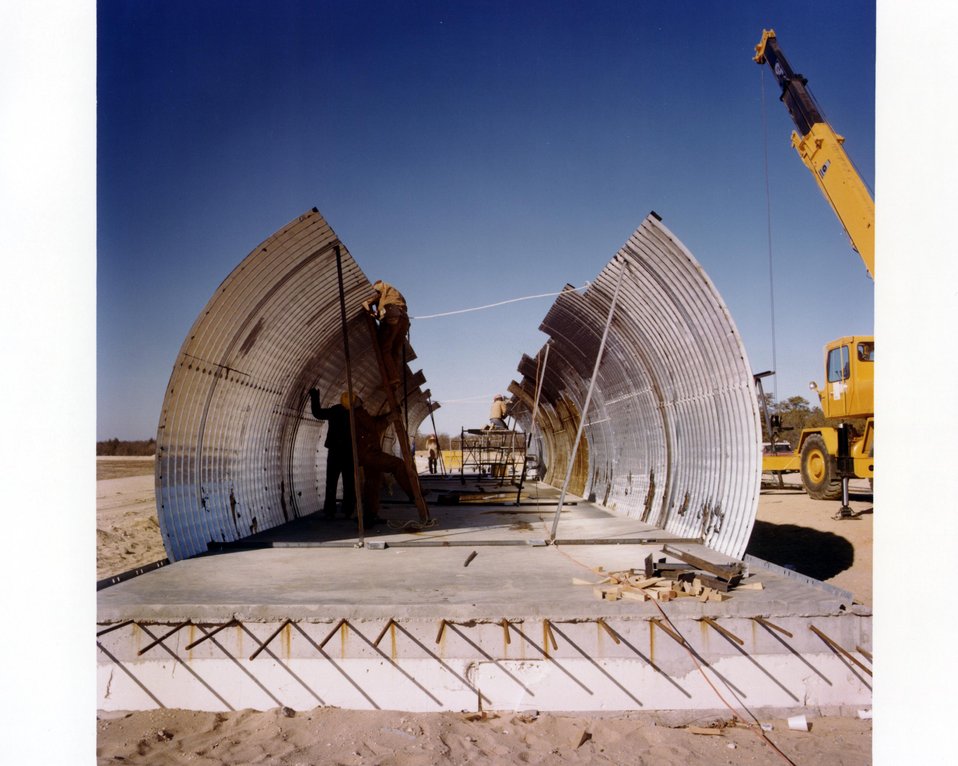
CBA, A PROTON-PROTON COLLIDING BEAM ACCELERATOR TO STUDY THE BASIC STRUCTURE OF ENERGY AND MATTER, IS BEING BUILT ON THE NORTHWEST QUADRANT OF THE 5,250 ACRE BROOKHAVEN SITE. THE FACILITY ITSELF IS AN UNDERGROUND CIRCULAR TUNNEL, WHICH IS 3.8 KILOMETERS IN CIRCUMFERENCE. TWO RINGS OF SUPERCONDUCTING MAGNETS WILL BE INSIDE THE TUNNEL. PROTON BEAMS WILL BE INJECTED INTO THE TUNNEL AND ACCELERATED TO ENERGIES UP TO 400 GEV. AT SIX PLACES ALONG THE TUNNEL, THE BEAMS WILL COLLIDE. EXPERI- MENTAL HALLS, WHICH ENCLOSE THESE SIX INTERSECTIONS, WILL HOUSE EQUIPMENT FOR STUDYING THE RESULTS OF THE COLLISIONS.